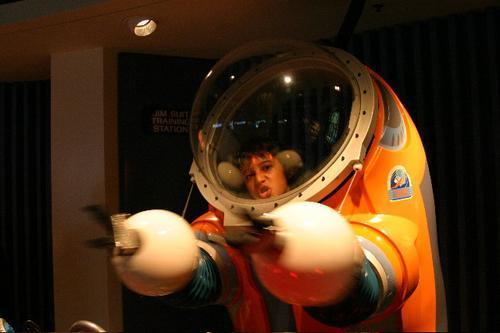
Spacesuit mockup in hands-on museum.